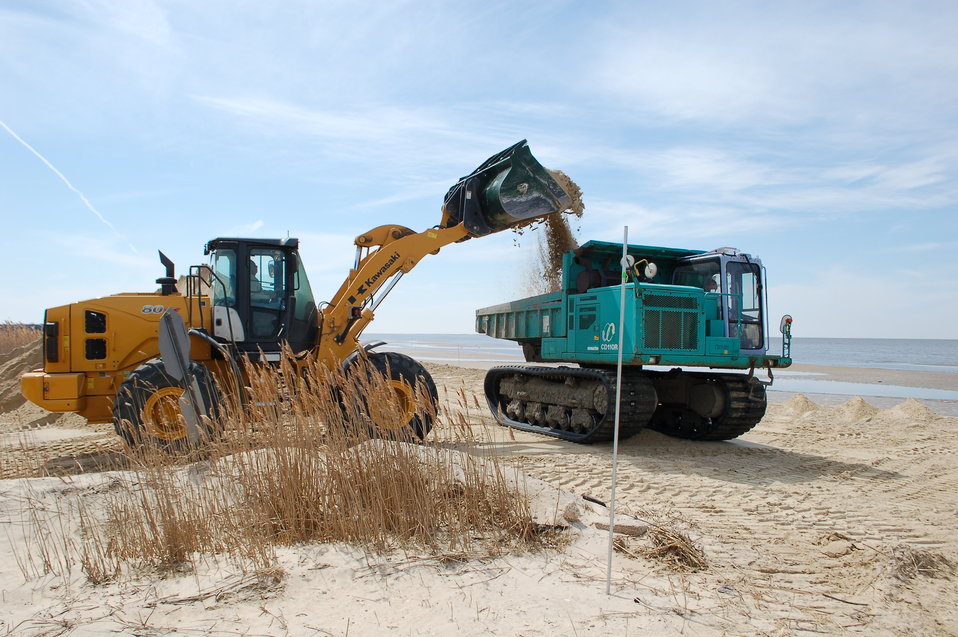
Kimbles Beach-6

Teamwork!